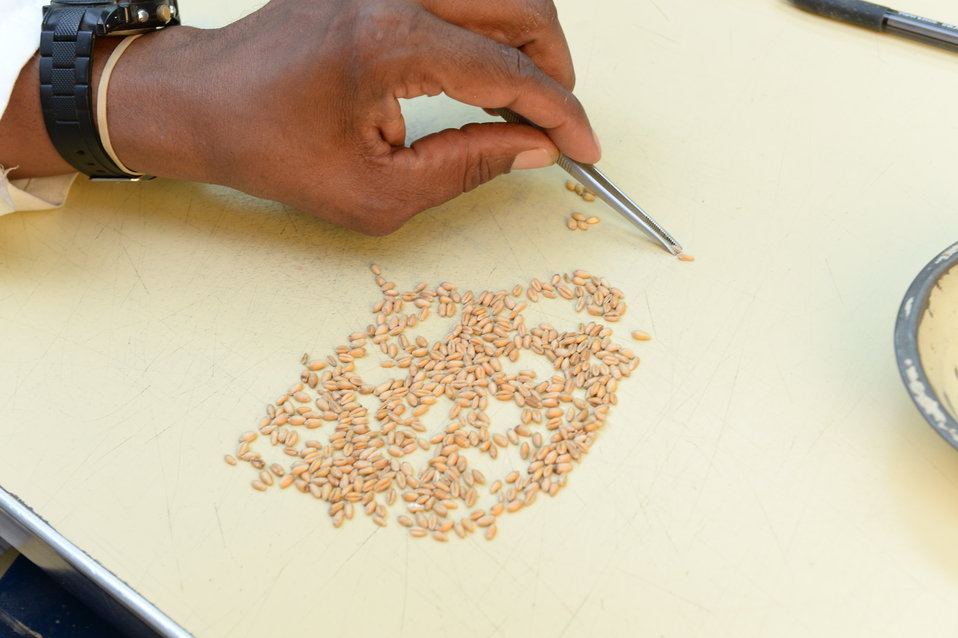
A U.S. Department of Agriculture (USDA) Grain Inspection, Packers and Stockyards Administration (GIPSA) Federal Grain Inspection Service (FGIS) scientist tests wheat at the FGIS inspection laboratory in New Orleans, LA on Monday, Nov. 18, 2013.